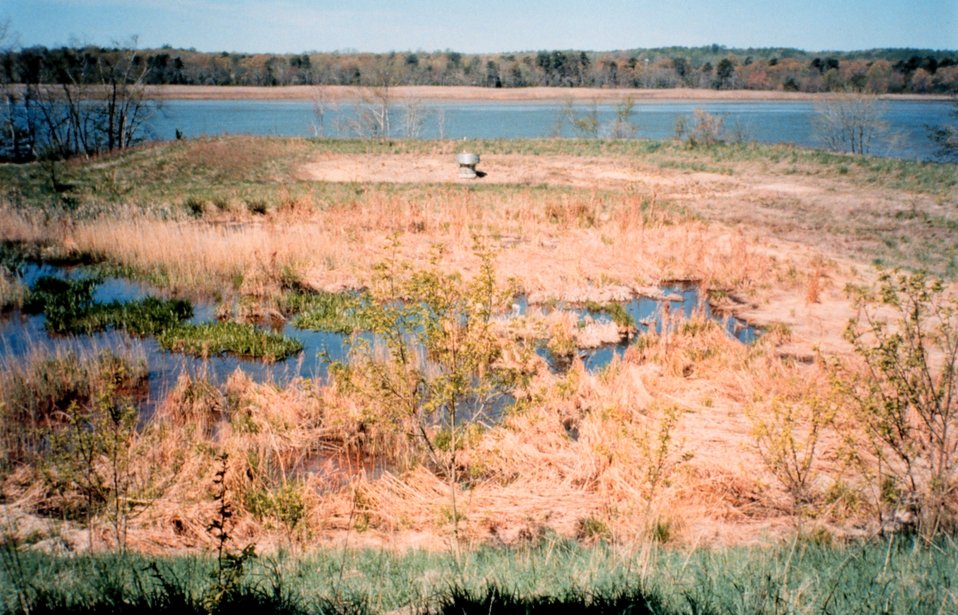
Overlooking the Ferry Landing Woods sediment settlement pond and marsh.